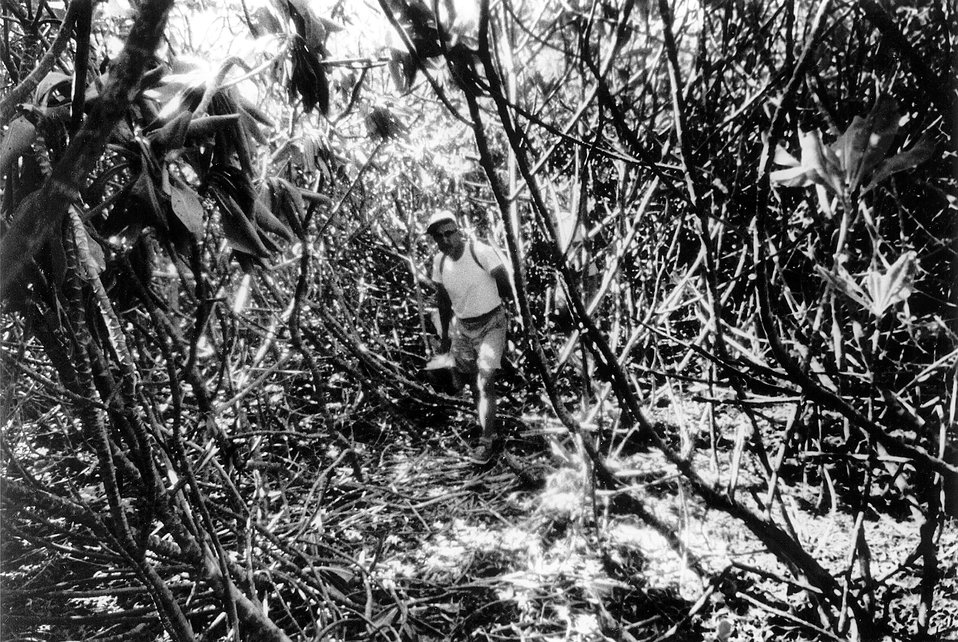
Six years after last nuclear testing on Bikini Islands, scientists check condition of Bikini Islands.
c.1964